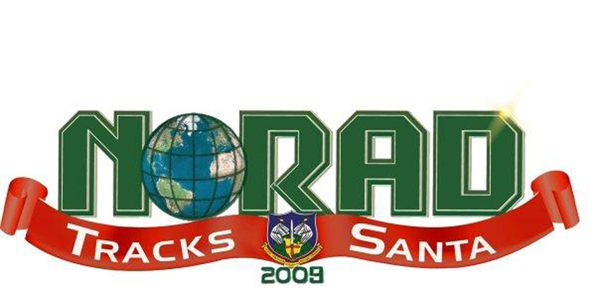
'America's AOC' tracks Santa this Christmas Eve

Members of the 601st Air and Space Operations Center here will once again track Santa Claus on part of his journey around the world this Christmas Eve, and media interested in tracking Santa are invited to visit